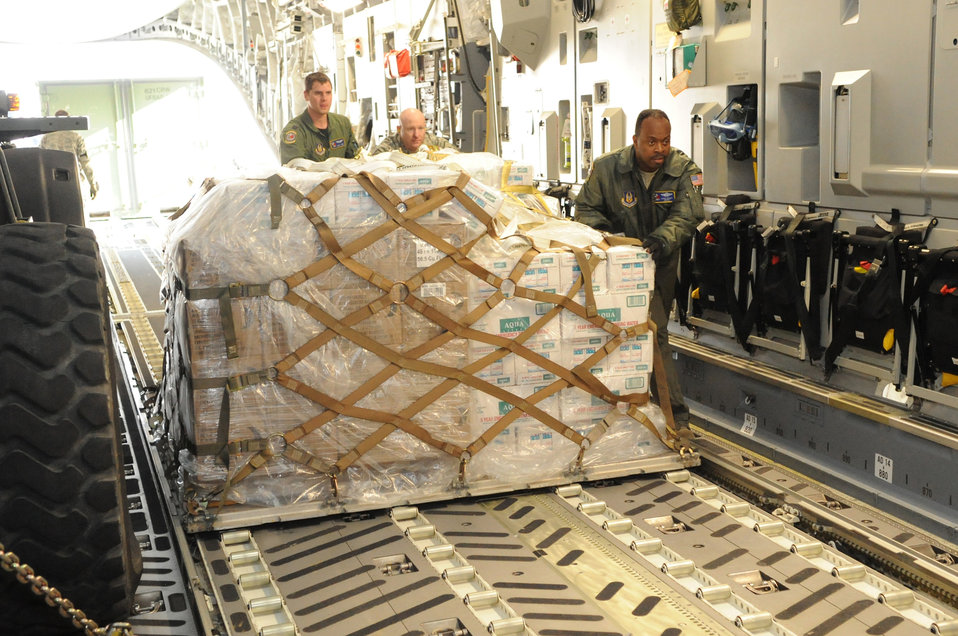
JB McGuire Airmen provide earthquake relief

Airmen take the first step in providing relief supplies to Haiti Jan. 14, 2010, at Joint Base McGuire-Dix-Lakehurst. Together, they loaded bottles of water and other relief supplies on a C-17 Globemaster III in support of Haiti humanitarian relief operations.